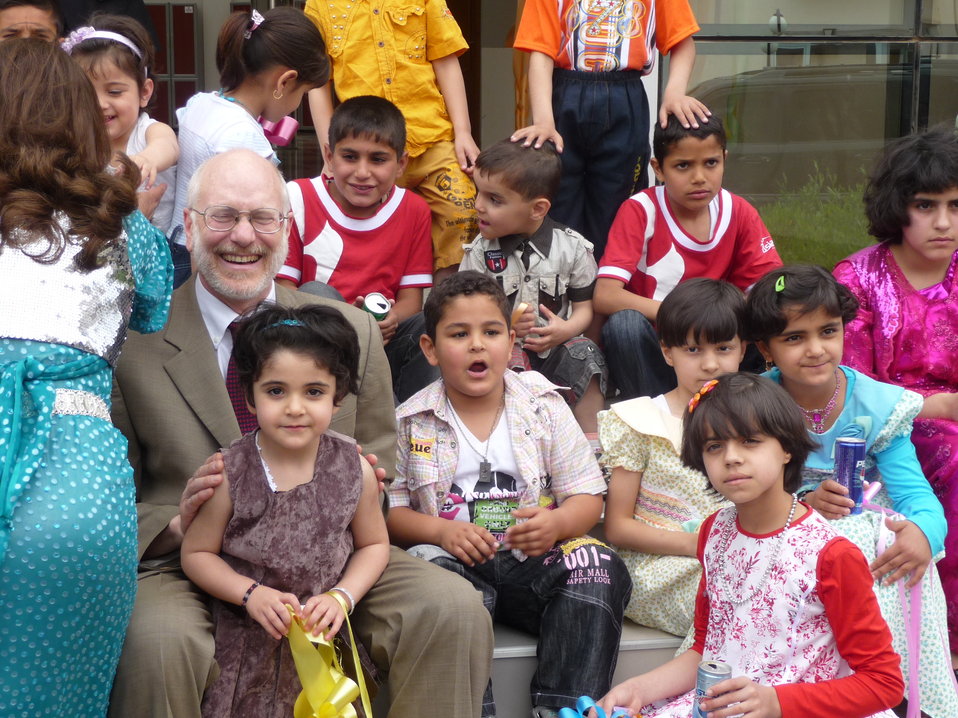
Andy Snow Engages Iraqi Children

RRT Erbil Team Leader Andy Snow engages residents of USAID-funded orphanage/eldercare facility in Erbil, Iraqi Kurdistan, Iraq, April 2010.